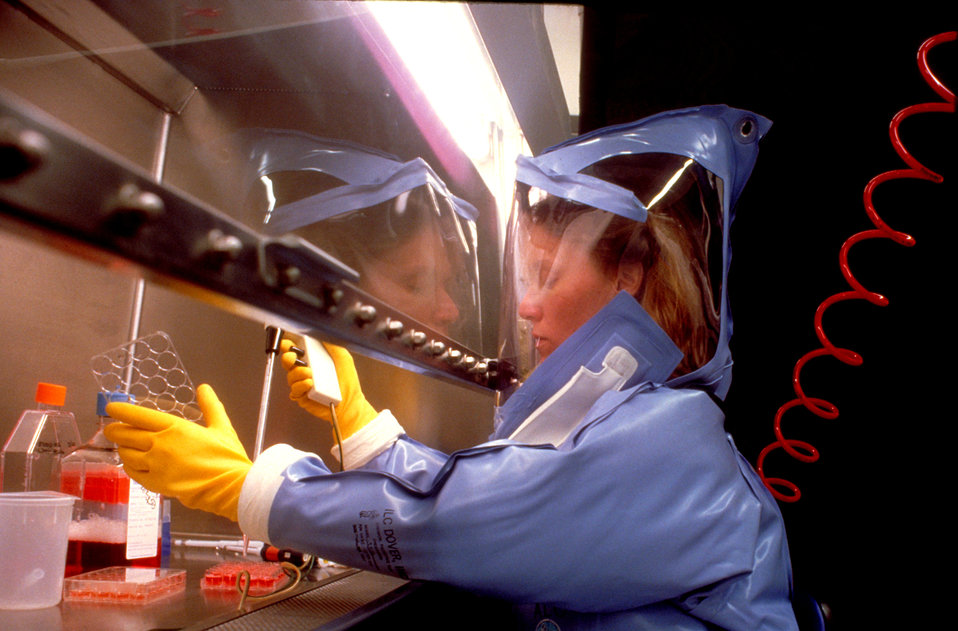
CDC laboratory scene.